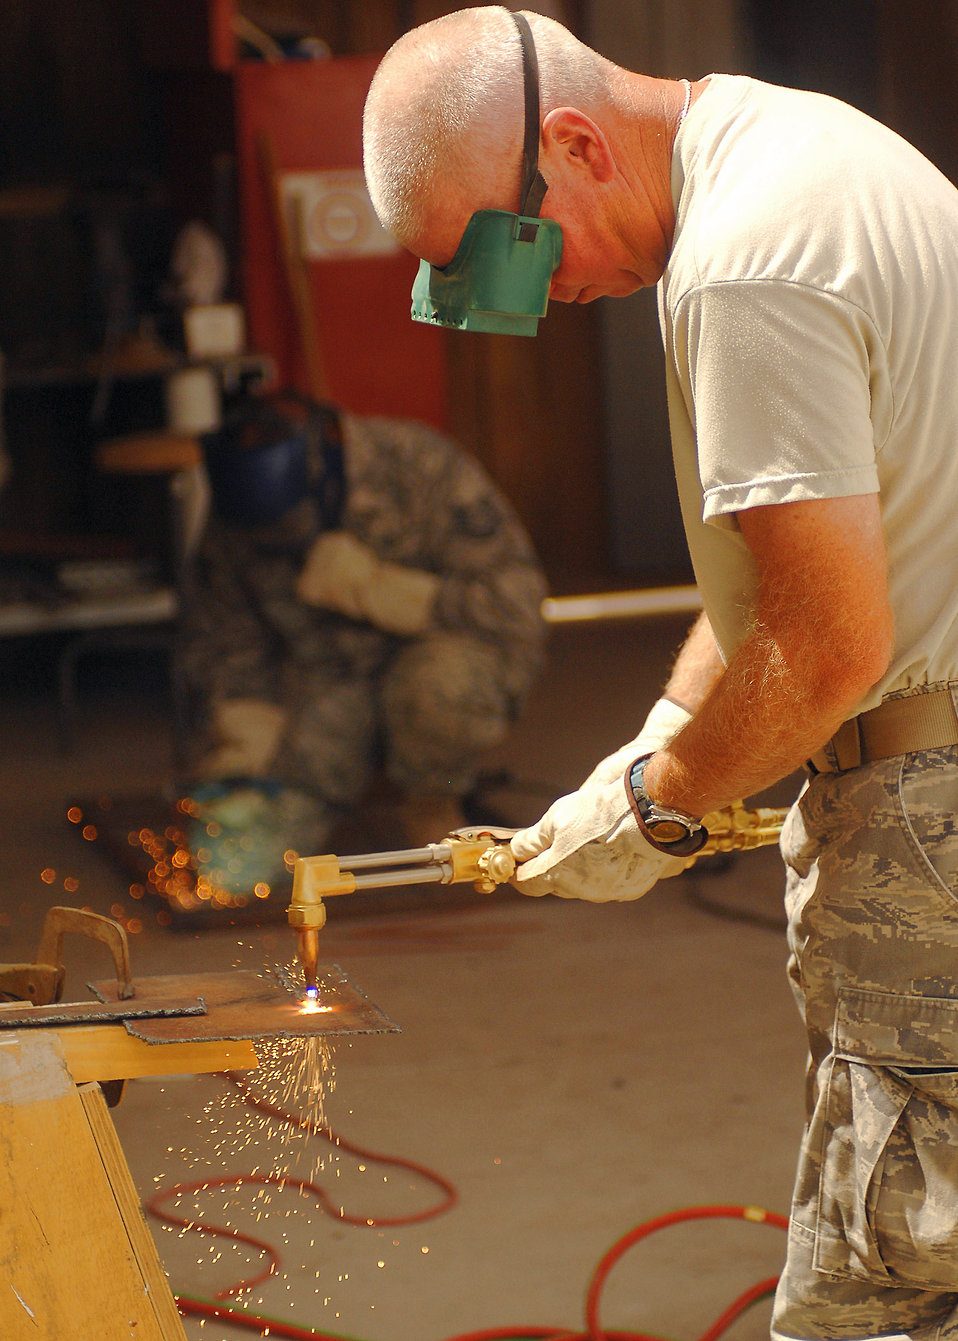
Working dog kennels receive massive renovation

Staff Sgt. Mark Gorton (foreground) uses a blow torch to cut metal, while Tech. Sgt. Anthony Roman welds a frame together on July 11 at a base in Southwest Asia. The 386th Expeditionary Civil Engineer Squadron is completing a project to increase the square footage of the K-9 kennels for the 386th Expeditionary Security Forces Squadron. The metal frames will be used to build new ramps for the dogs. Sergeant Roman is deployed from the 156th Airlift Wing, Muniz Air National Guard Base, Puerto Rico. Sergeant Gorton is deployed from the 136th Airlift Wing, Fort Worth, Texas.